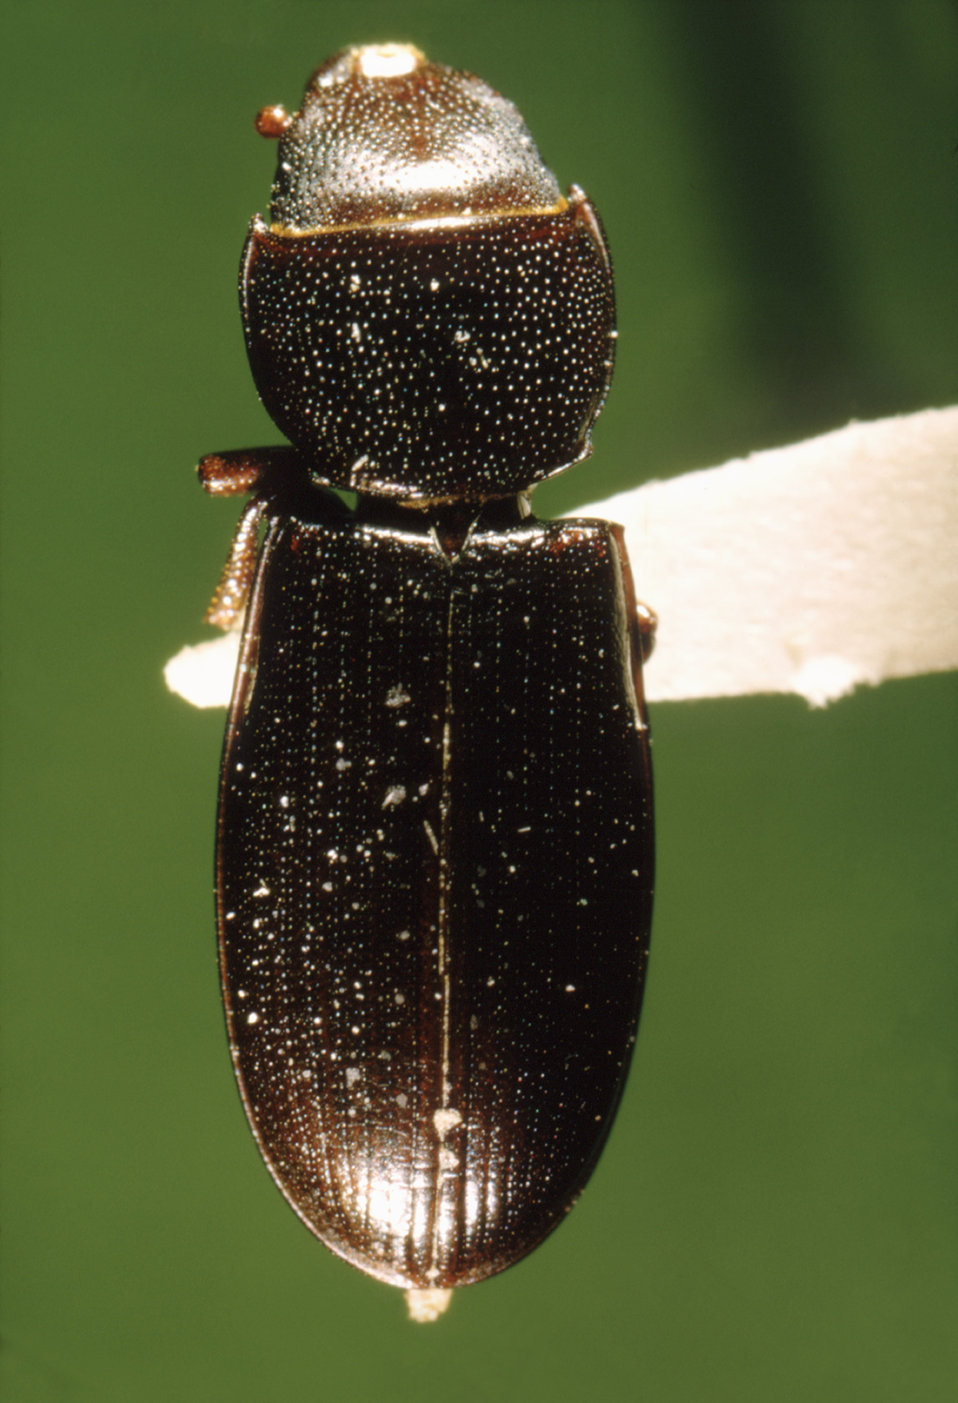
This ia a dorsal view of a 'cadelle beetle', Tenebroides mauritanicus often found in grain silos and mills; Mag. 7.7X.